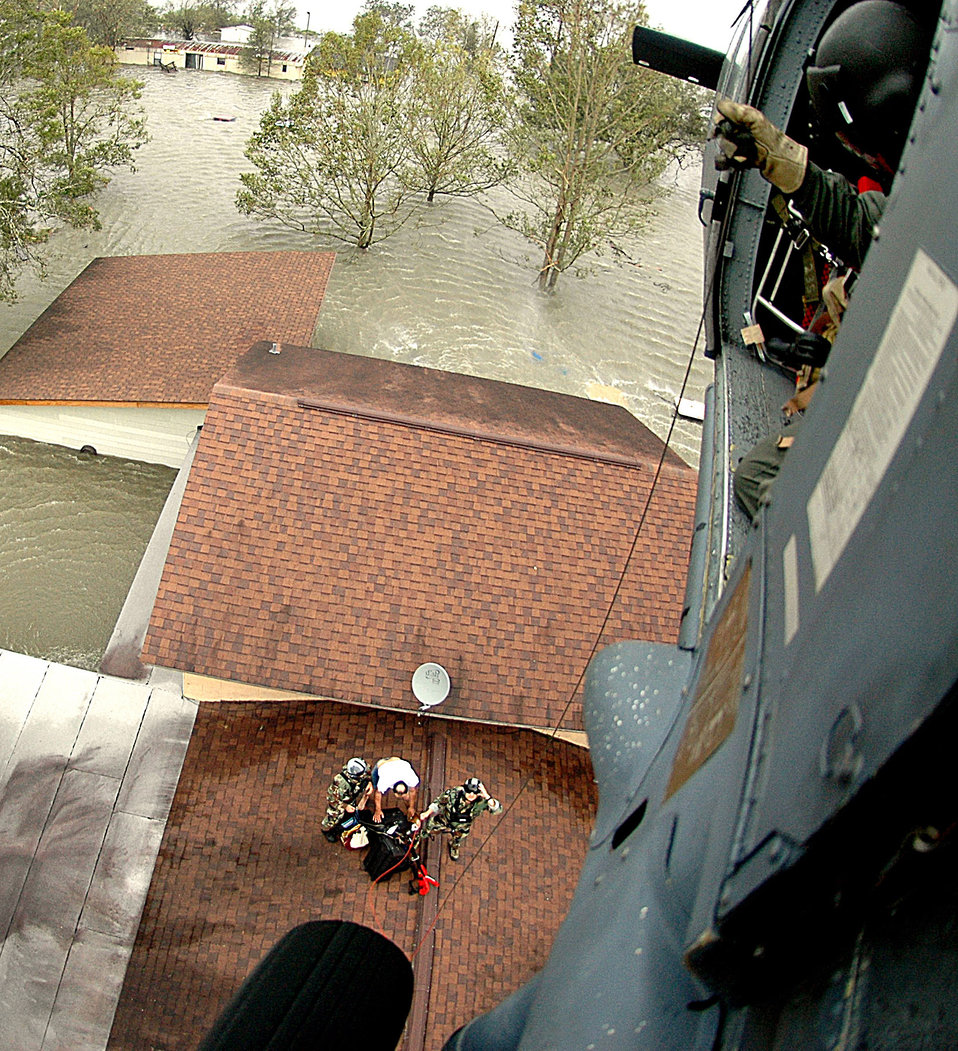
Rescue team pulls seventeen from floodwaters

Air Force Reserve pararescuemen assigned to the 331st Air Expeditionary Group prepare to rescue a family trapped on the roof of their home by flood waters from Hurricane Ike. Deployed from the 920th Rescue Wing at Patrick Air Force Base, Fla., the pararescuemen, along with aircrews, two HH-60G Pave Hawk helicopters and two HC-130P/N refueling aircraft, rescued 17 people from the small Texas town of Nederland Sept. 13.